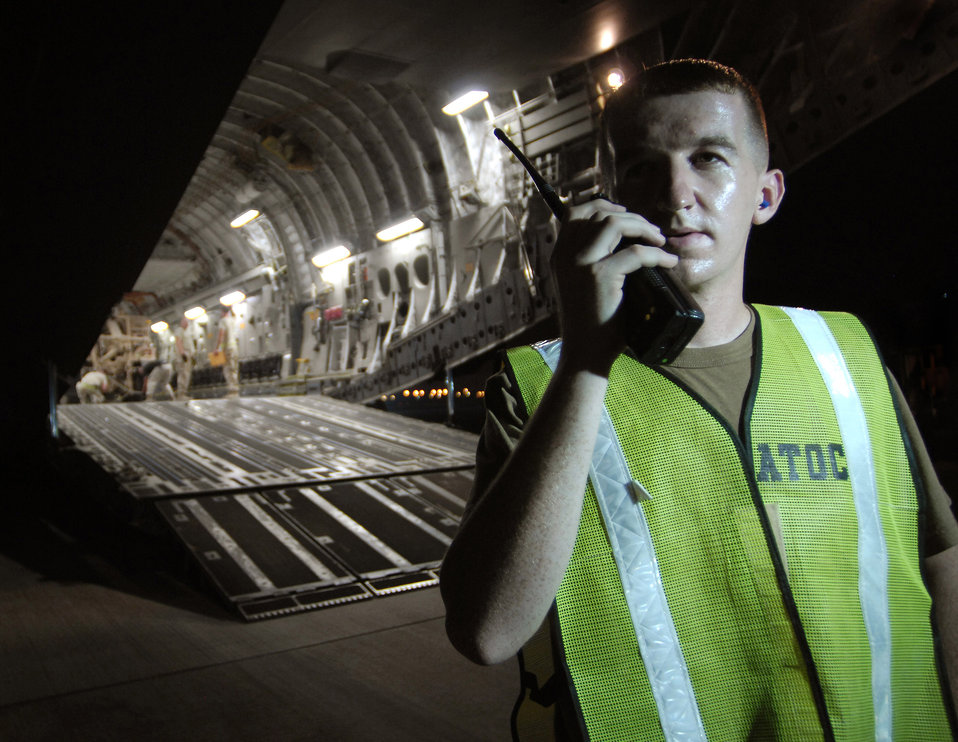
CENTAF Mobility director visits Airmen at Camp Djibouti

Staff Sgt. Shawn Finch checks in with the Air Terminal Operations Center after helping to load a 58,210-pound armored wrecker onto a C-17 Globemaster Sept. 30 in Southwest Asi. Air mobility in the U.S. Central Command area of operations makes it possible to move people and cargo where needed 24 hours a day, seven days a week. Sergeant Finch is an air terminal operations controller with the 8th Expeditionary Air Mobility Squadron.